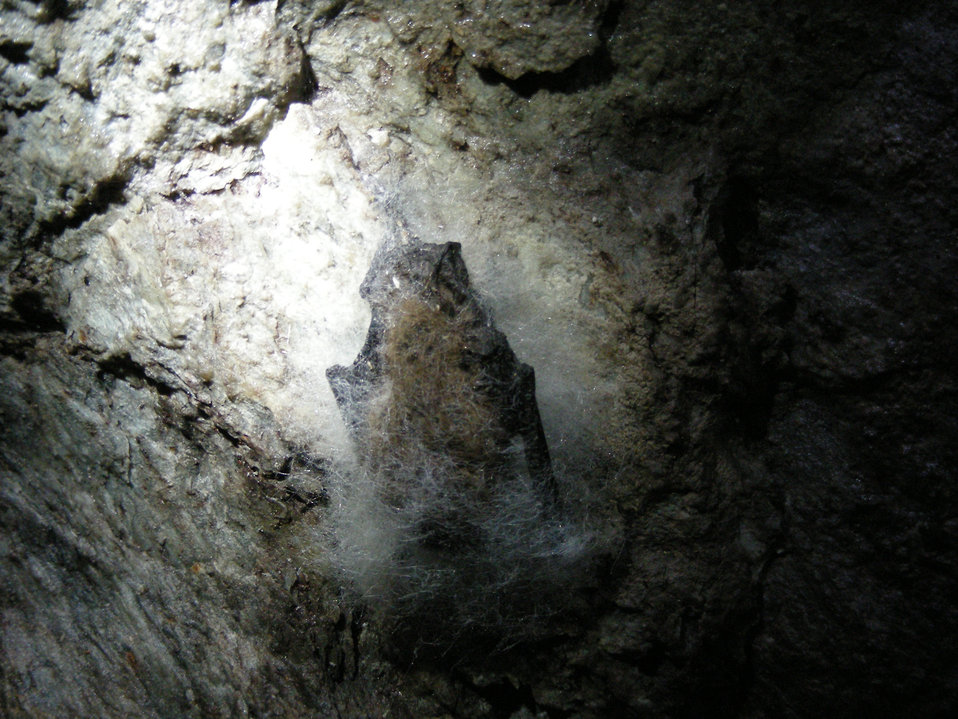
Bat affected by White-nose Syndrome

Little brown bat with white-nose syndrome in Greeley Mine, Vermont, March 26, 2009